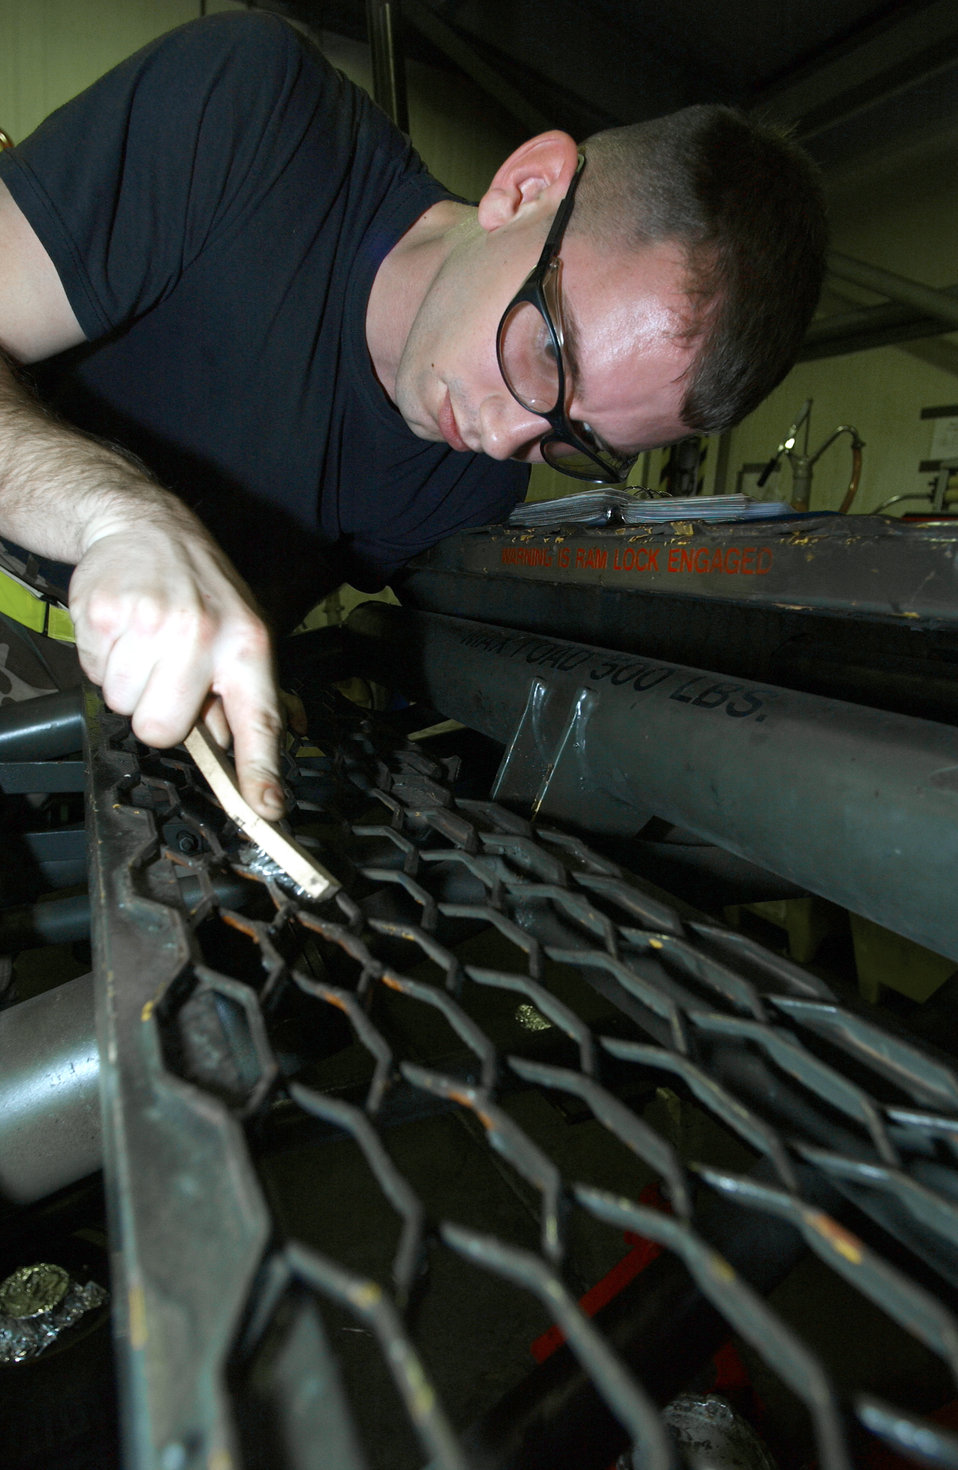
Cleaning the steps

ROYAL AIR FORCE LAKENHEATH, England -- Airman 1st Class Ryan Winklebaur cleans welding here April 6. The welding is used by maintenance crews to climb onto jets. Airman Winklebaur is an aircraft ground equipment journeyman with the 48th Equipment Maintenance Squadron.